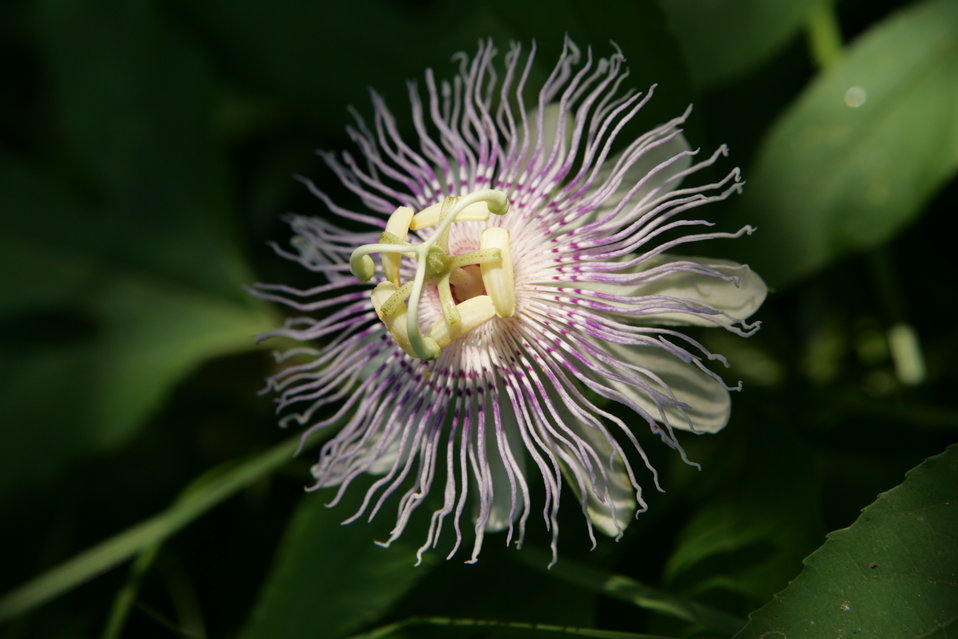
passion flower

Cape Romain National Wildlife Refuge, SC